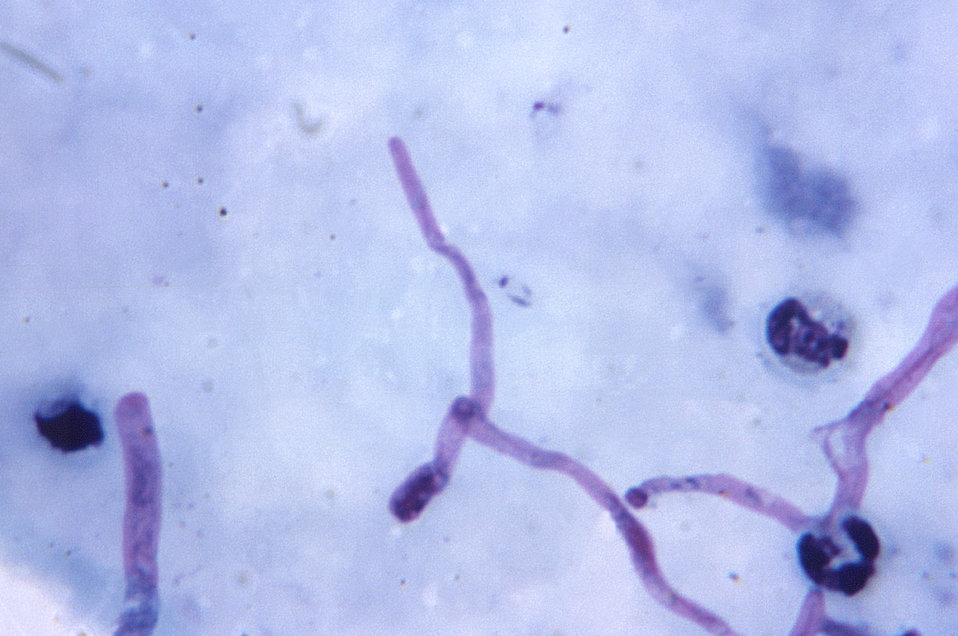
Magnified 1125X, this thick film photomicrograph revealed the presence of a growing Plasmodium vivax trophozoites, as well as a number of artifactual mold hyphae.